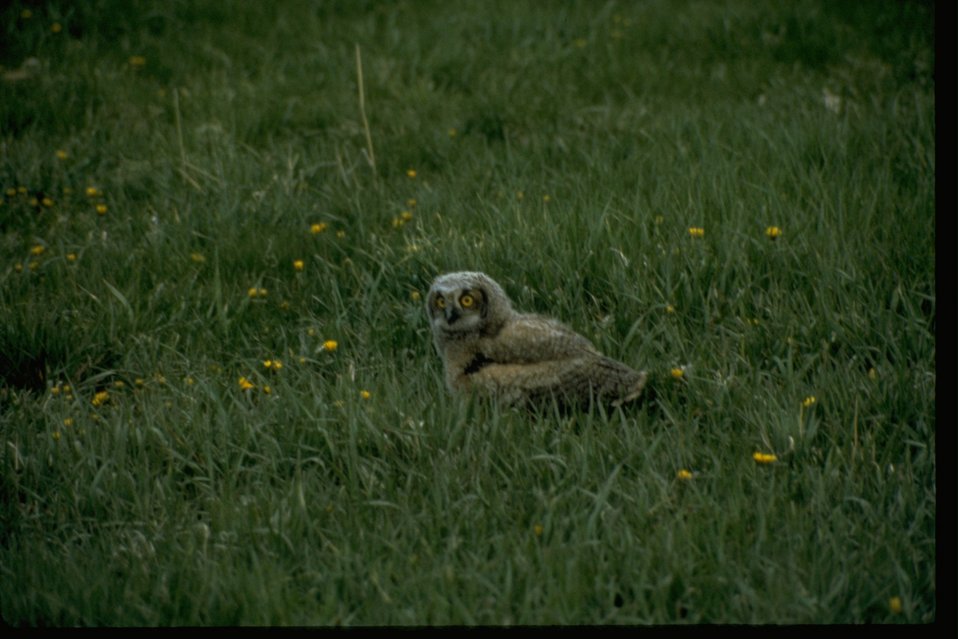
A Short-eared Owl sitting in long grass.